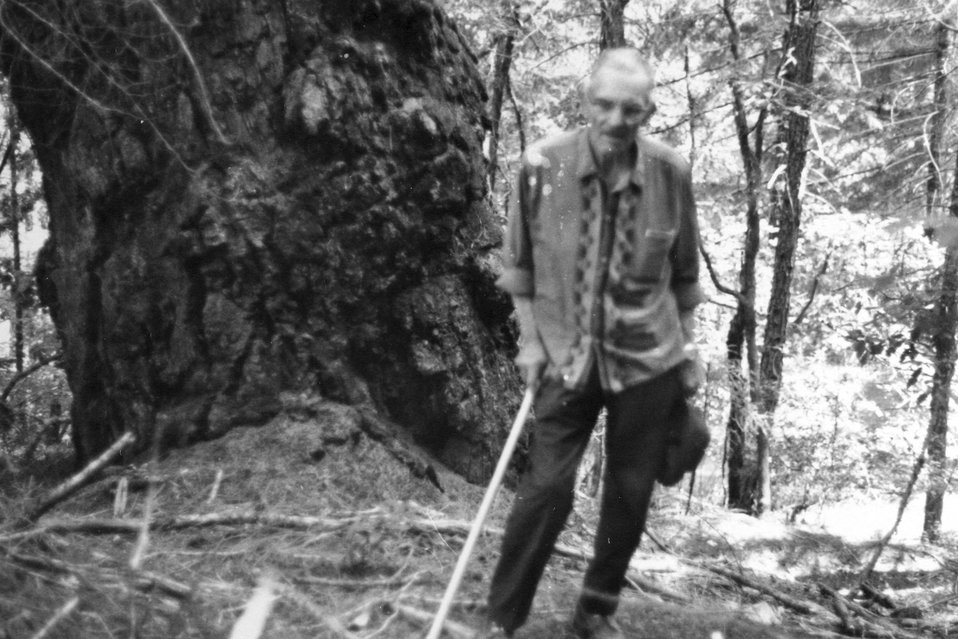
Ivin Billings looking at graves a Mule Creek by the old U.S.F.S Gaurd station.